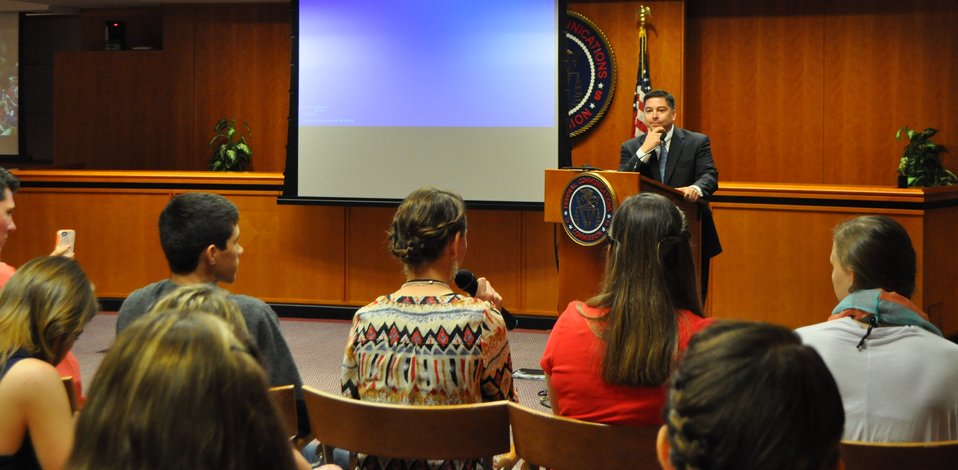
6.3.2014 Foundation for Rural Services Youth Tour

Commissioner O'Rielly speaking at the Foundation for Rural Services Youth Tour, 6/3/14.